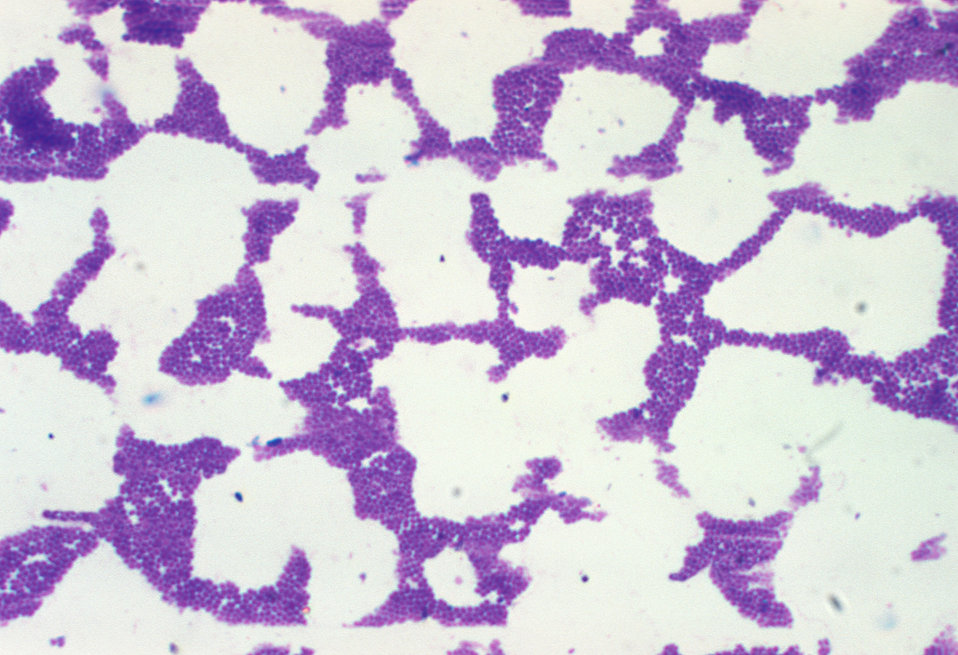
Photomicrograph of Gram-positive Group D Streptococcus bacteria magnified 320X.